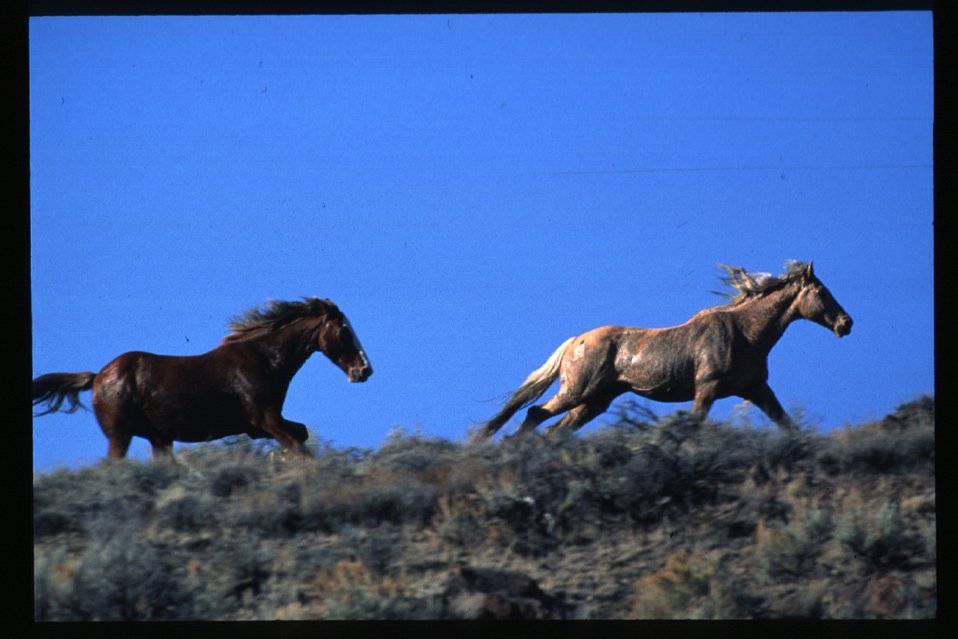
Wild horse and burro Corral roundup WHB LSRD Lower Snake River District